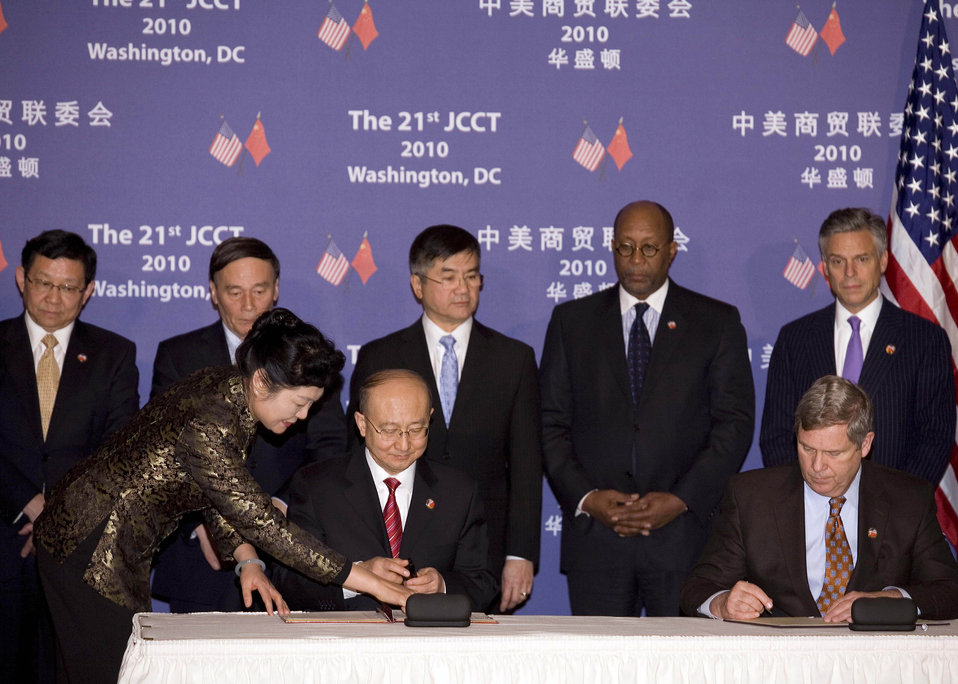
Chinese General Administration of Quality Suprvision, Inspection, and Quaraine Minister Zhi Shuping and Agriculture Secretary Tom Vilsack sign a Memorandum of Understanding (MOU) between China and United States at the Commerce Department, in Washington, D.C., on Wednesday, December 15, 2010. The MOU was a result of the 21st session of the U.S. - China Joint Commission on Commerce and Trade (JCCT). The JCCT resulted in an agreement with China for significant intellectual property rights enforcement initiatives, market opening, and revisions to its indigenous innovation policies that will help boost U.S. exports. (In background L to R Chinese Minister of Commerce Chen Deming, Chinese Vice Premier Wang Qishan, Commerce Secretary Gary Locke, U.S. Trade Representative Ron KIrk, U.S. Ambassador to China Jon Huntsman, and Foreign Agricultural Service employee Wade Shepherd). USDA photo 10di1573-8144.